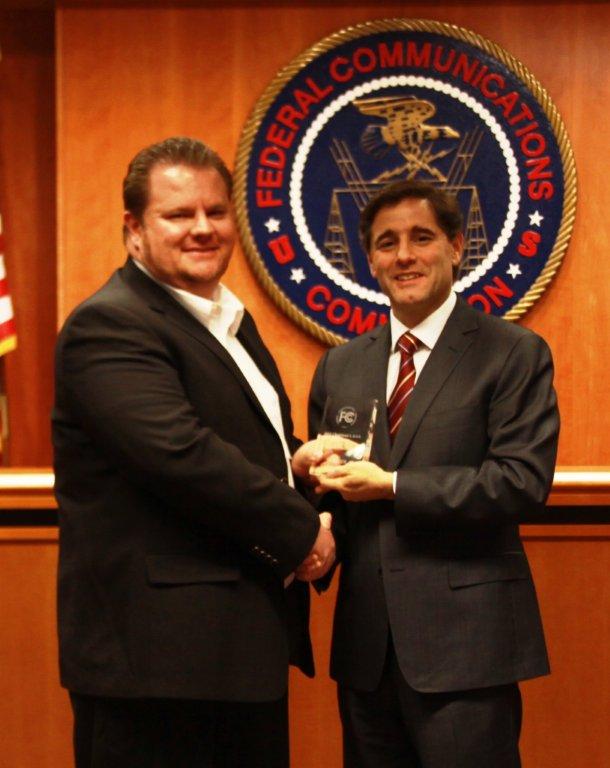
Sean Goggin, Project Possibility, Accepts Education: College or University Award

Sean Goggin, accepts Education: College or University Award from Chairman Genachowski for Project Possibility.